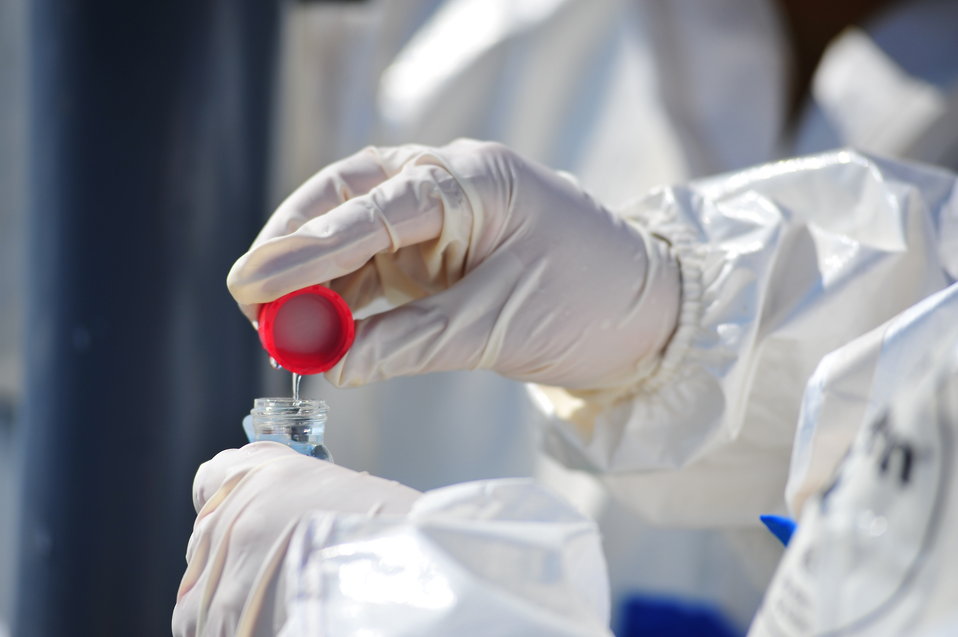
EPA's response to the Enbridge oil spill

August 2, 2010 - Water and sediment sampling operations during Enbridge Spill Response on Morrow Lake near Battle Creek, Michigan from Mudpuppy II, EPA's news research vessel.